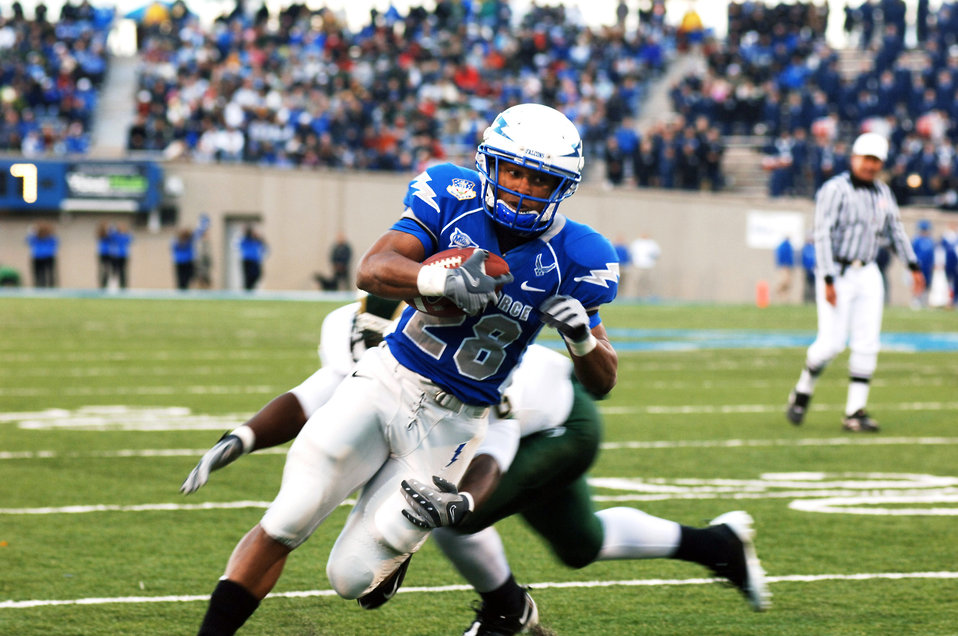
Falcons sheer Rams 38-17

Air Force Falcon sophmore Ryan Lumpkin escapes a would-be tackler during a game against Colorado State University Nov. 8 at Falcon Stadium in Colorado. The Falcons went on to beat the Rams 38-17, advancing their record to 8-2, which is its best 10-game record since 1998 when the team opened 9-1.